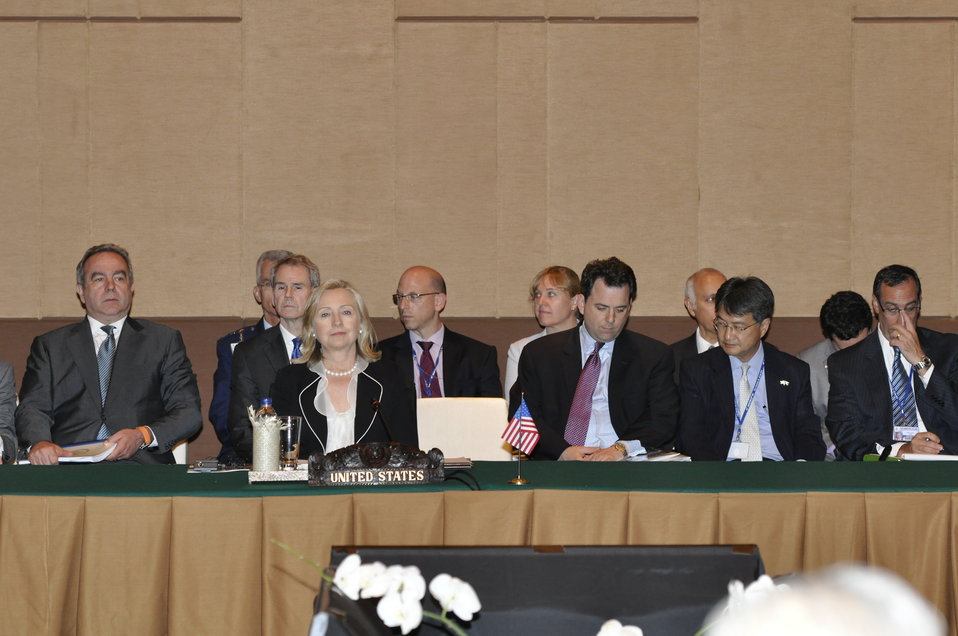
Secretary Clinton Participates in the U.S.-ASEAN Ministerial Meeting

U.S. Secretary of State Hillary Rodham Clinton participates in the U.S.–ASEAN Ministerial Meeting in Bali, Indonesia, on July 22, 2011. Seated behind the Secretary, left to right, are: U.S. Assistant Secretary of State for East Asian and Pacific Affairs Kurt Campbell, U.S. Ambassador to ASEAN David Carden, U.S. Assistant Secretary of State for Political-Military Affairs Andrew Shapiro, U.S. Deputy Assistant Secretary of State for East Asian and Pacific Affairs Joseph Yun, and U.S. Deputy Assistant Secretary of Defense Robert Scher.